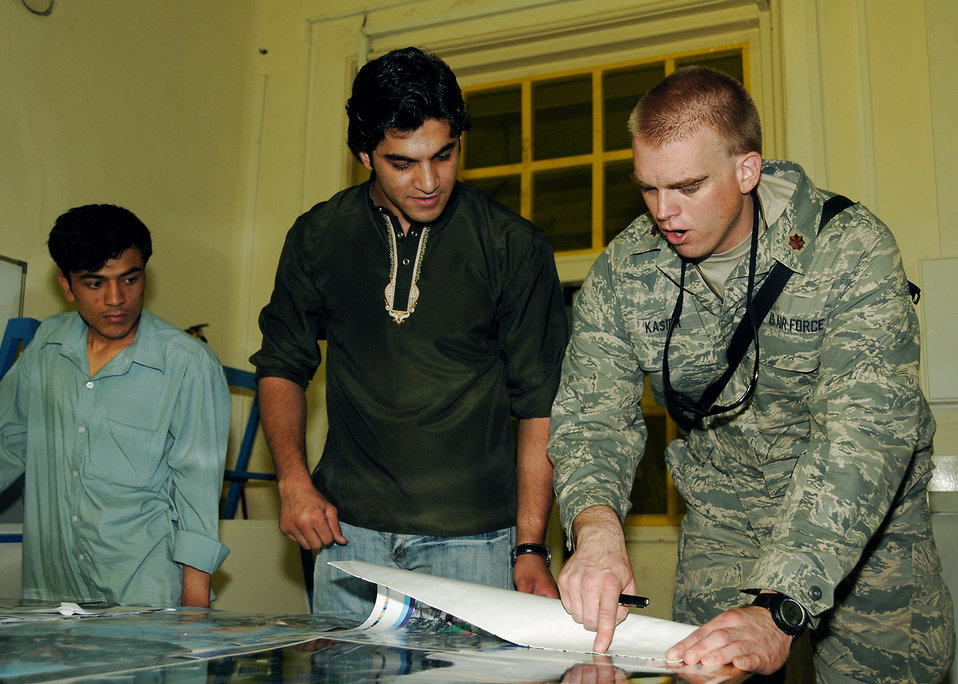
ANA print plant supports mission, training

Maj. Paul Kaster discusses a print job with an Afghan National Army civilian at the ANA print plant in Kabul, Afghanistan. During an average week, the plant produces more than 75,000 products used for training, recruitment and logistical support. Major Kaster is a Combined Security Transition Command-Afghanistan Afghan National Army communications mentor.